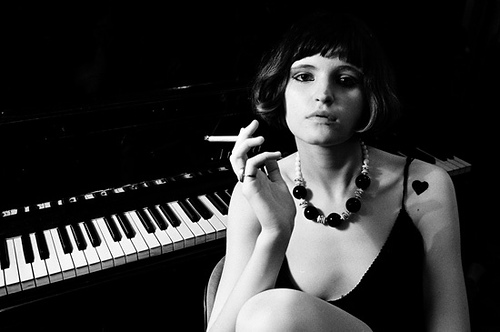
Русский: Дуня Смирнова